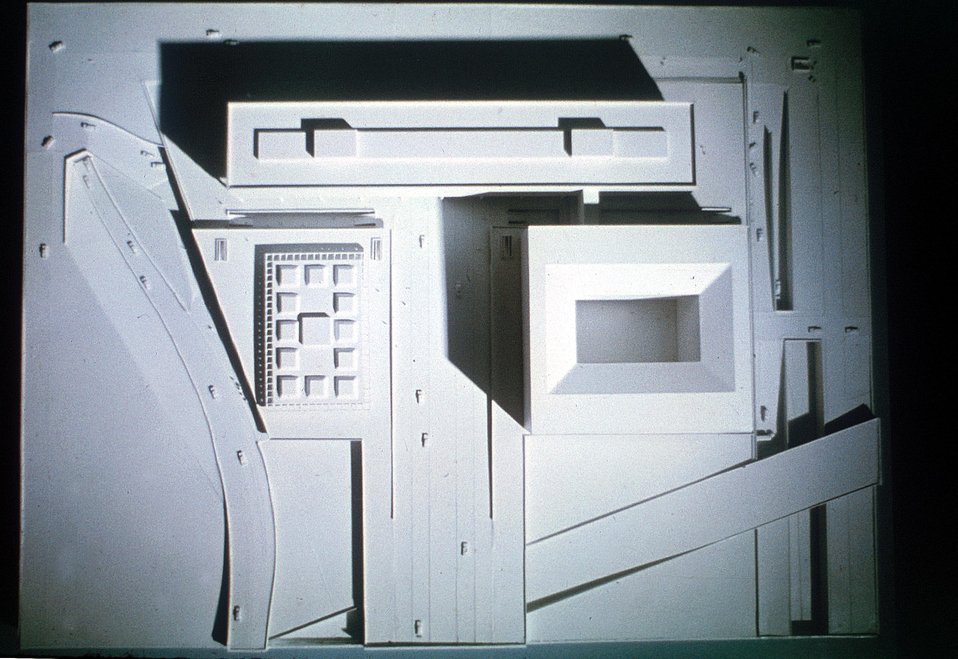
Federal Office building No. 5 Washington DC